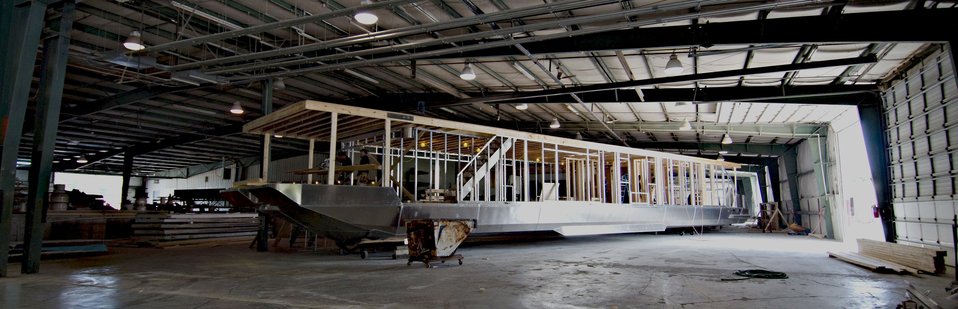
Stardust Industries is using it's expertise in luxury houseboats to help retool and redirect Monticello, Kentucky’s houseboat manufacturing industry on Wednesday, July 13, 2011 The houseboat industry has been decimated because of the struggling economy – by using its facilities and manpower to create low-cost housing that is energy efficient. Rural Development obligated $499,000 in Rural Business Enterprise Grant funds to support this unique endeavor. Up until a few years ago, there were several successful houseboat manufacturers in the four-county area surrounding the city of Somerset. Most have now ceased operation or drastically reduced output, which has led to dramatic, long-term job loss. These new energy efficient homes will be constructed in redesigned, refitted houseboat factories using local workers that have been retrained.